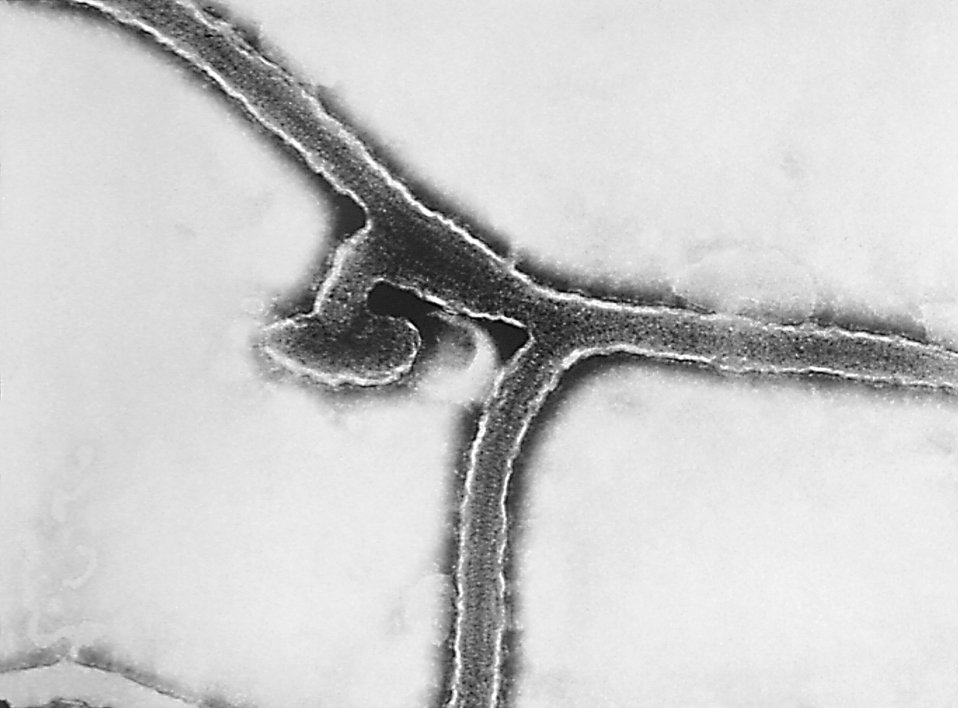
Transmission electron micrograph of Marburg virus.